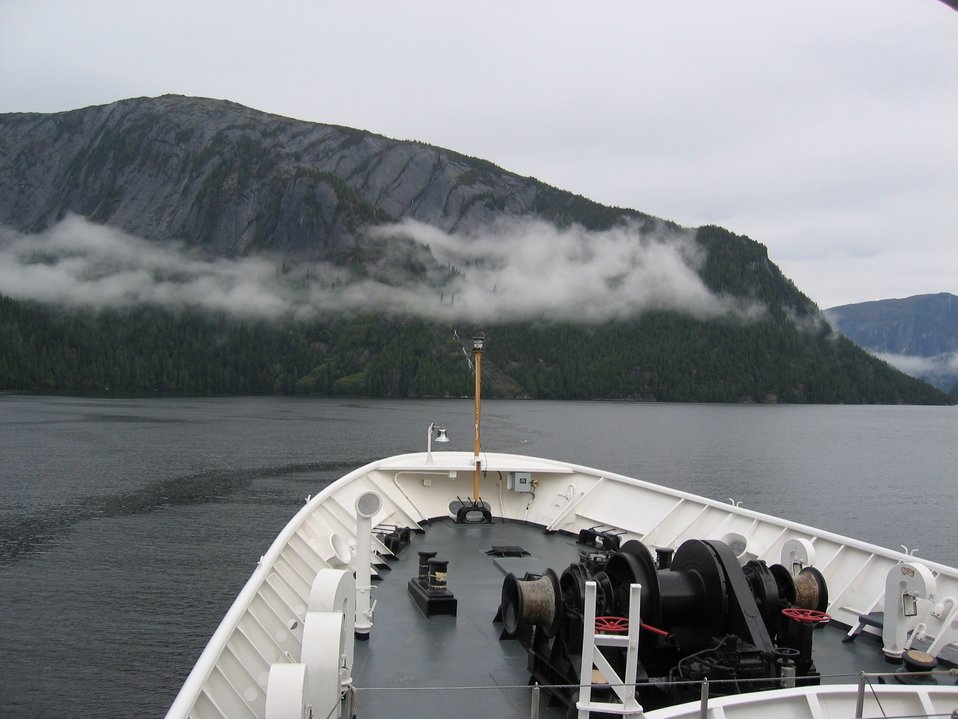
The bow of the RAINIER as it traverses the labyrinthine waterways of SE Alaska.